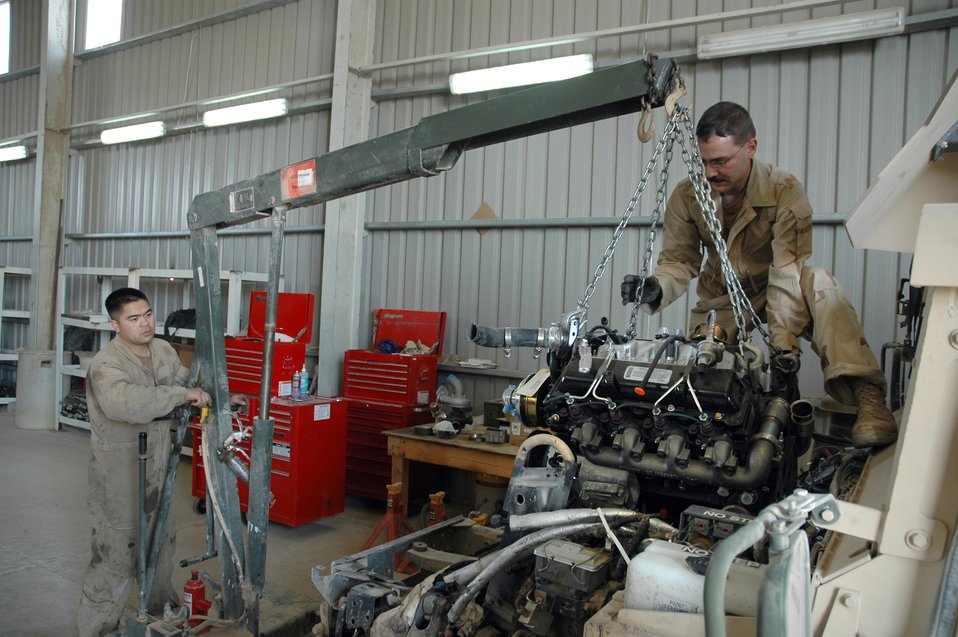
Mechanics turn wrenches to save lives

TIKRIT, Iraq (AFPN) -- Staff Sgt. Mel Perero (left) and Senior Airman Sean Johnson install a new engine in a Humvee. Mechanics assigned to the 732nd Expeditionary Logistics Readiness Squadron at base Speicher maintain armored gun trucks used by the Air Force convoy security detachment. Sergeant Perero deployed from Misawa Air Base, Japan, and Airman Johnson deployed from Vandenberg Air Force Base, Calif.